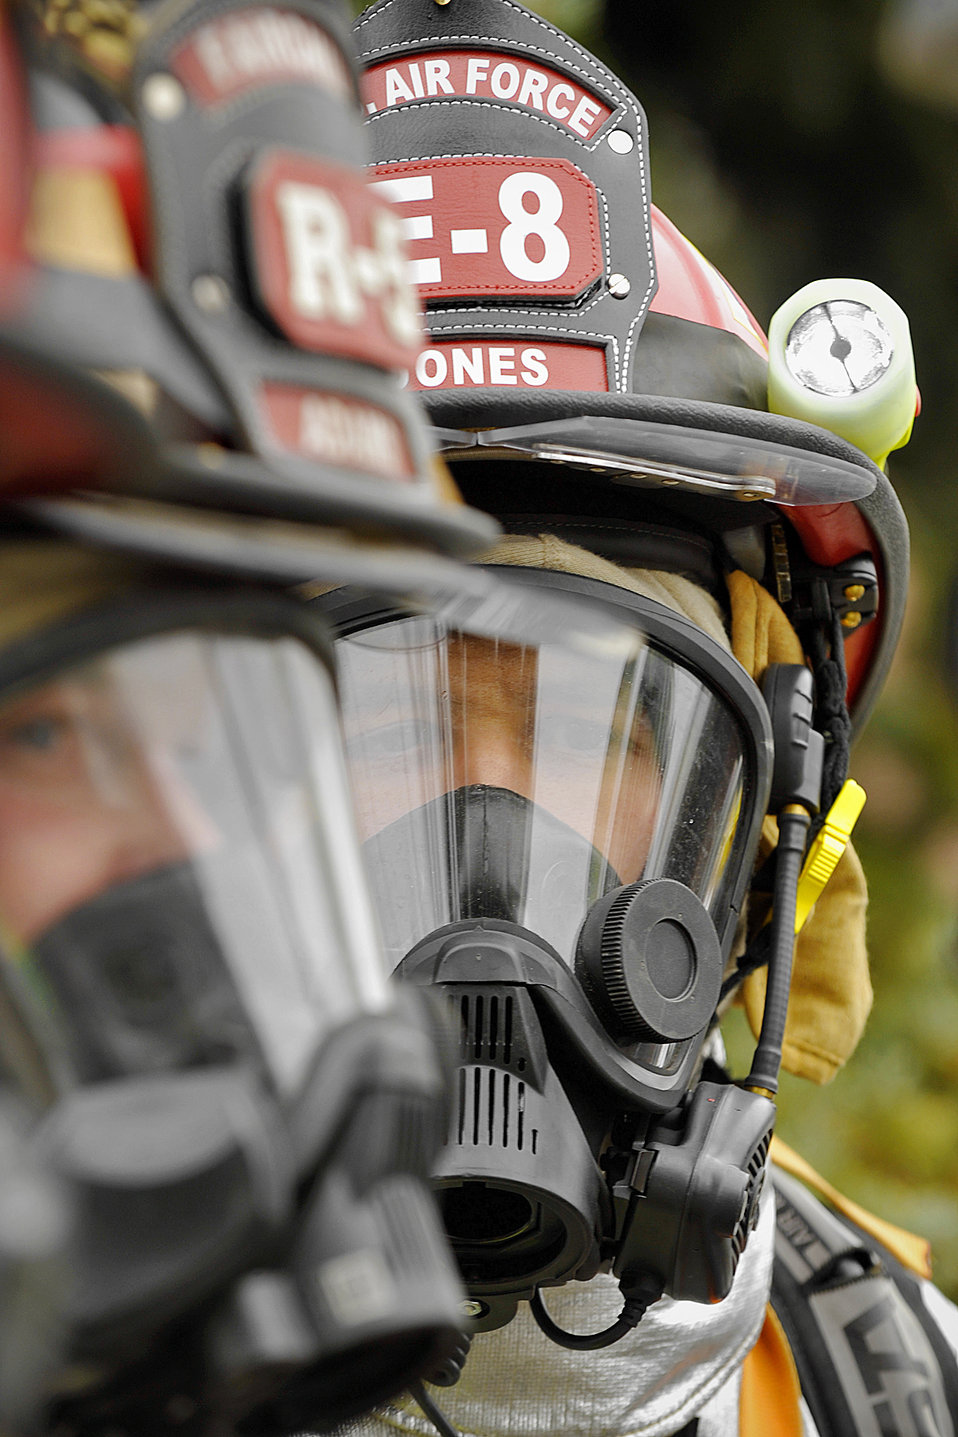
Waiting for the burn

Firefighters at Fairchild Air Force Base, Wash., wait to train in base housing units set for demolition Nov. 16, 2009. The Fairchild fire department set sections of these units on fire to help prepare for real-world emergencies.